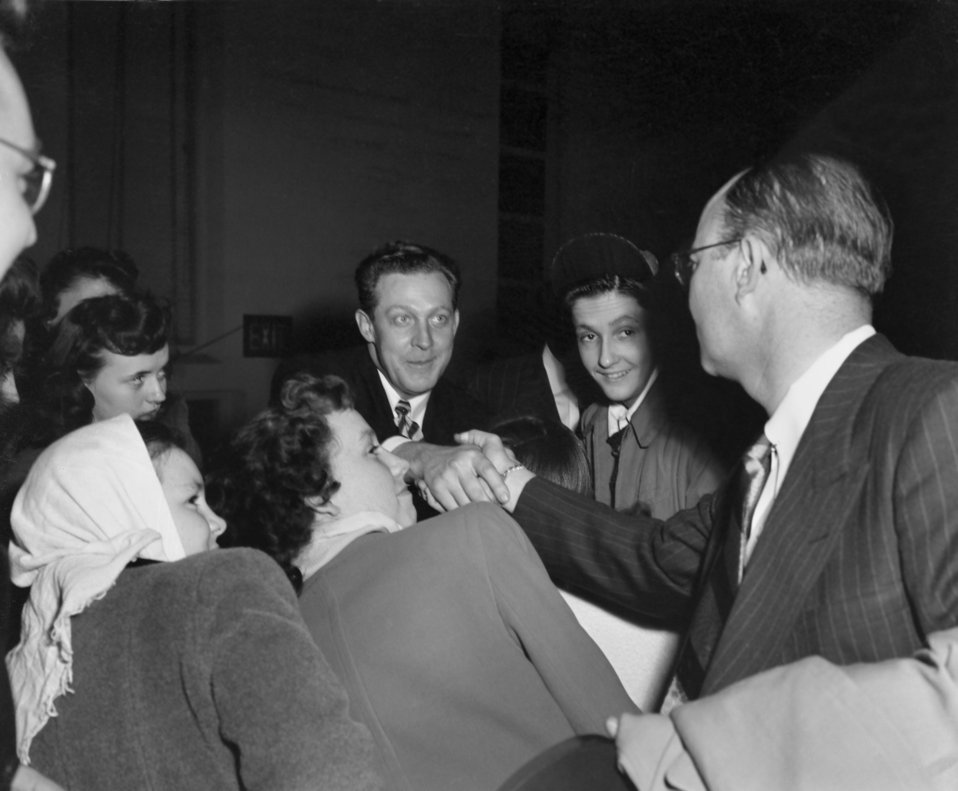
Radio Broadcast 'We the People' Oak Ridge 1947

3287-5a DOE photo Ed Westcott 2-9-1947 Oak Ridge Tennessee